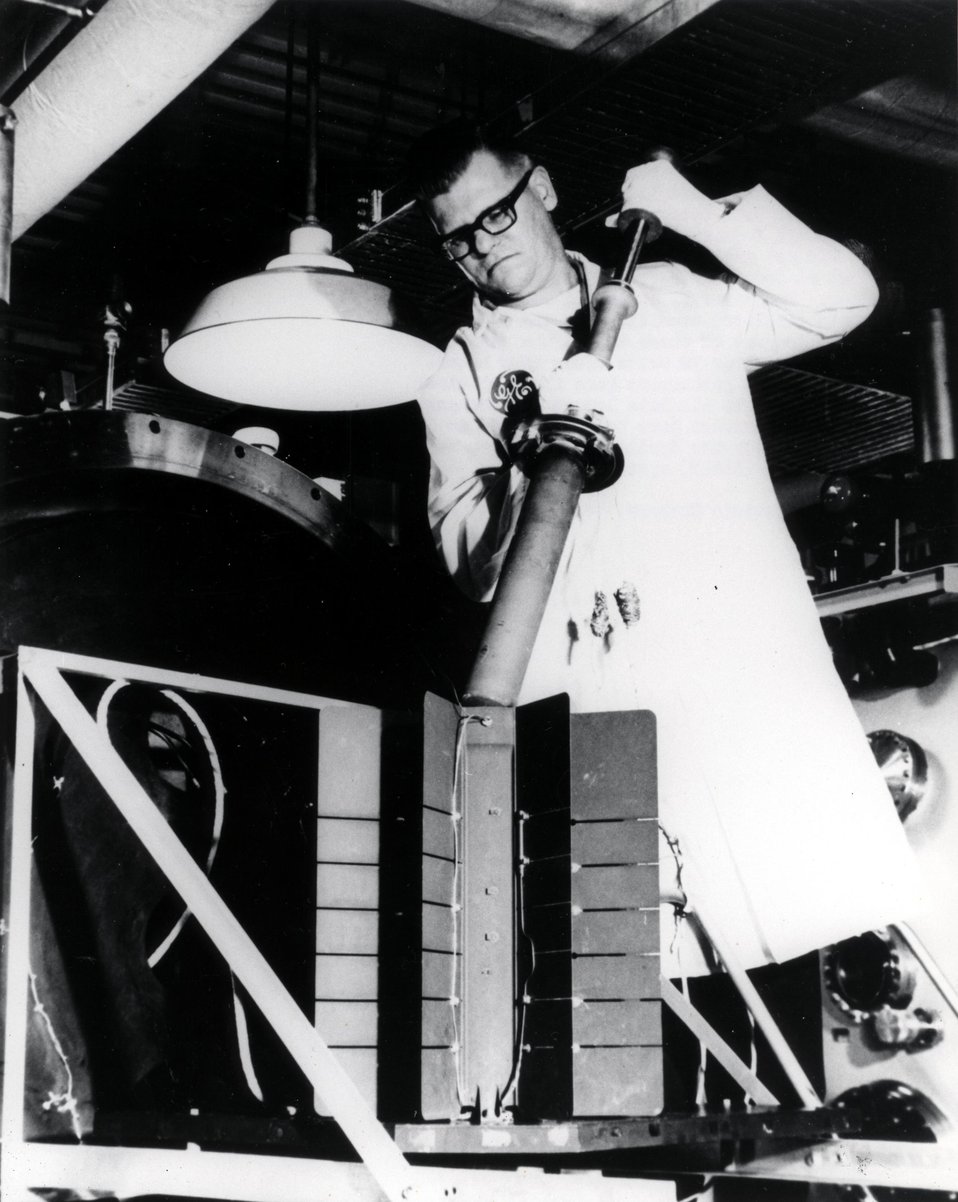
SNAP-27 TEST... Shown is a technician loading an electric fuel capsule into a SNAP-27 generator prior to life testing in a vacuum chamber.